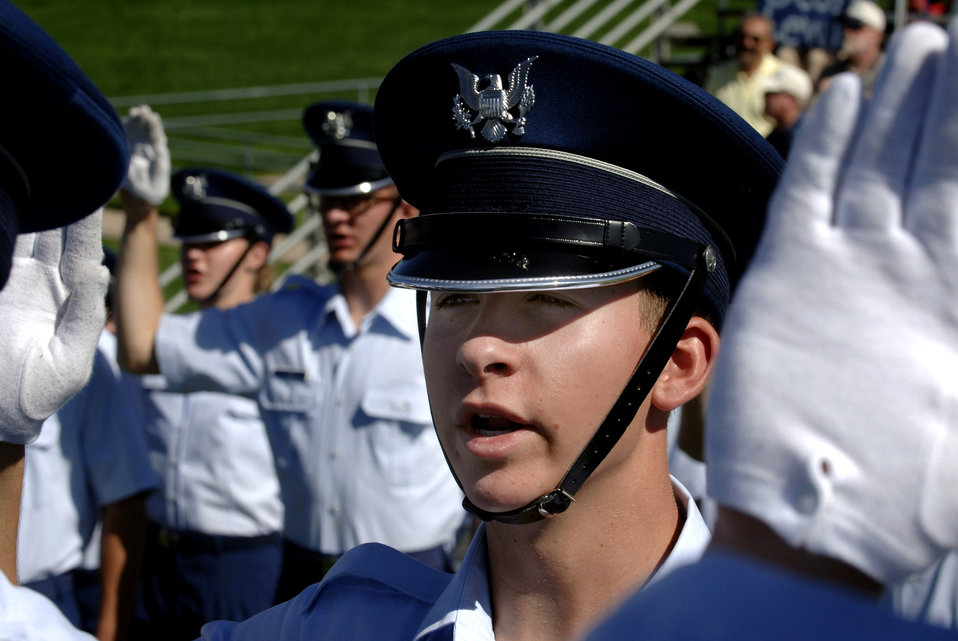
Acceptance Parade for Class of 2011

U.S. Air Force Academy Cadet 4th Class Andrew Taylor, along with the entire cadet wing, takes the Oath of Honor Aug. 8 during the Acceptance Parade at the Academy in Colorado Springs, Colo. The Acceptance Parade marks the formal acceptance of the new cadets into the cadet wing.